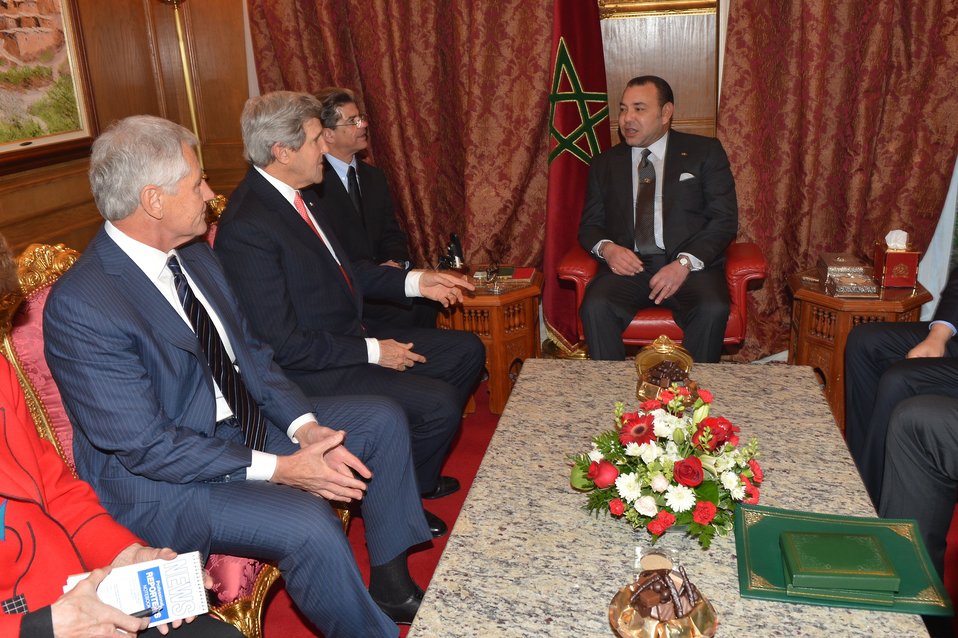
Secretaries Kerry, Hagel Meet With King Mohammed VI of Morocco

U.S. Secretary of State John Kerry and U.S. Secretary of Defense Chuck Hagel meet with King Mohammed VI of Morocco at the Moroccan Ambassador to the United States' residence in Washington, D.C., on November 20, 2013.